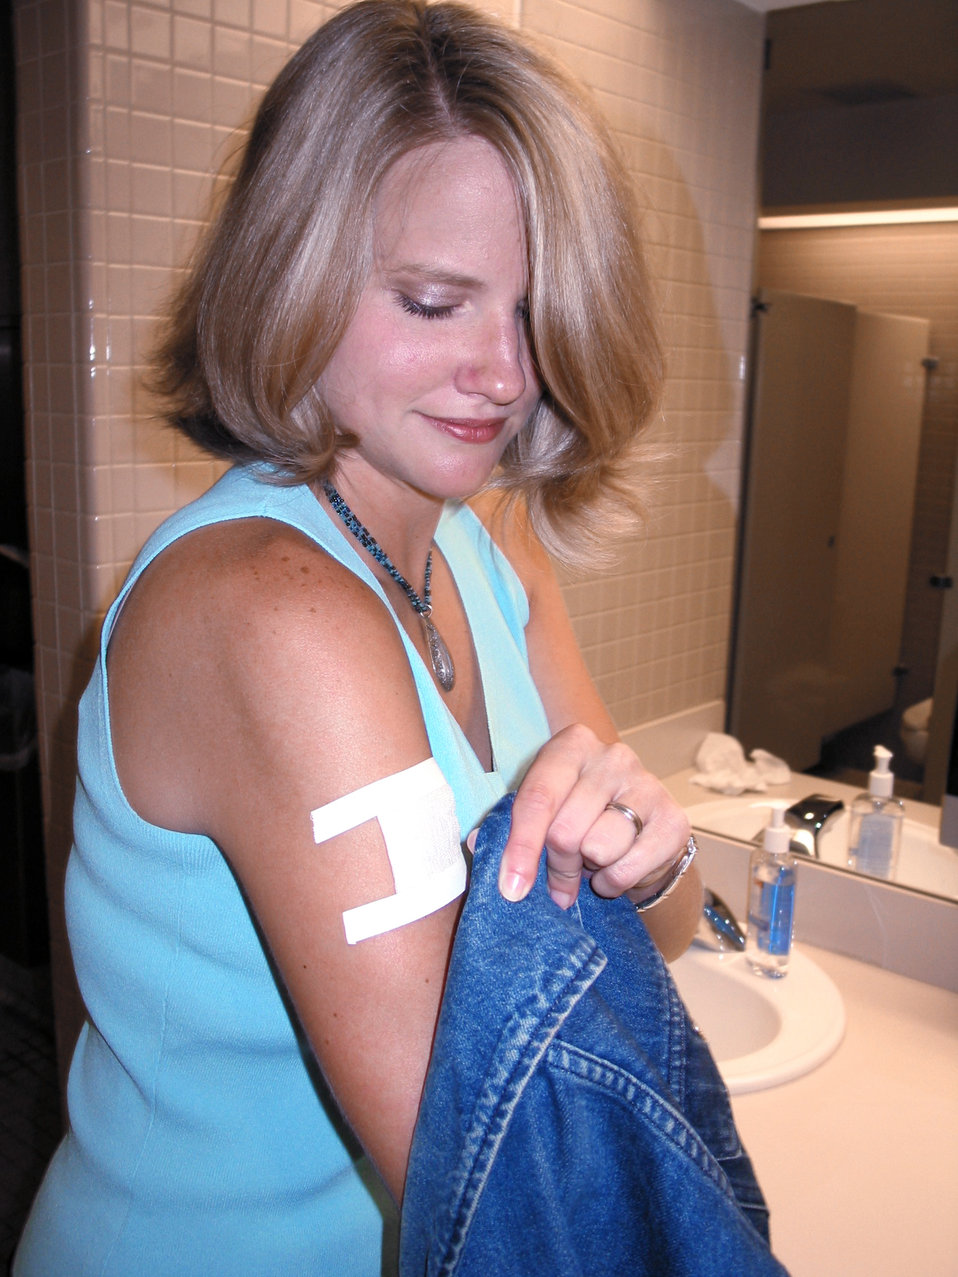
This smallpox vaccinee is shown covering the bandaged vaccination site with additional clothing.